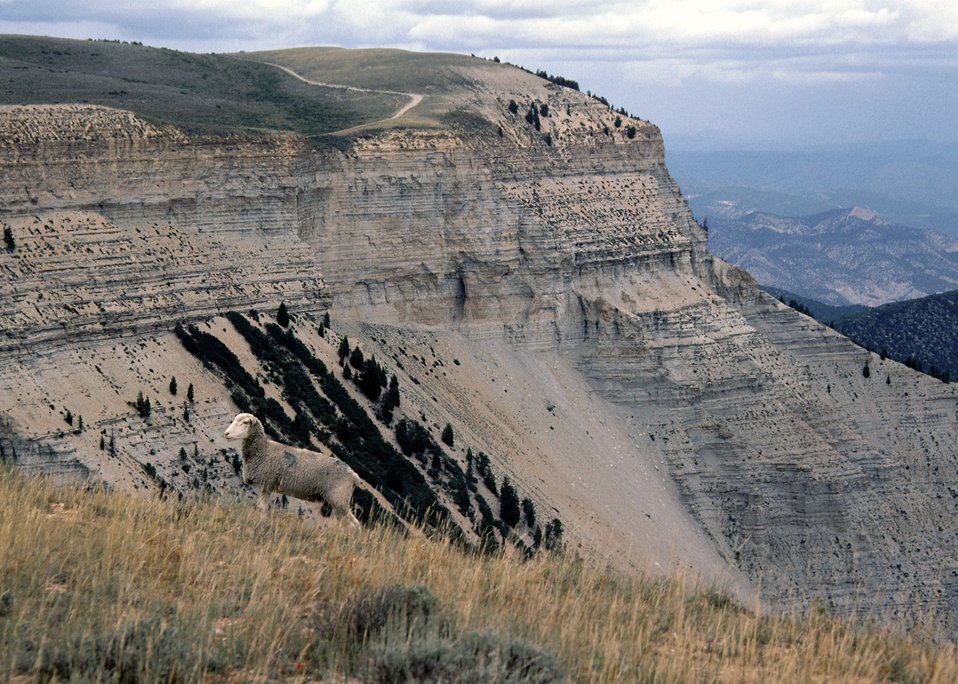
Sheep Garazing on the Roam Plateu